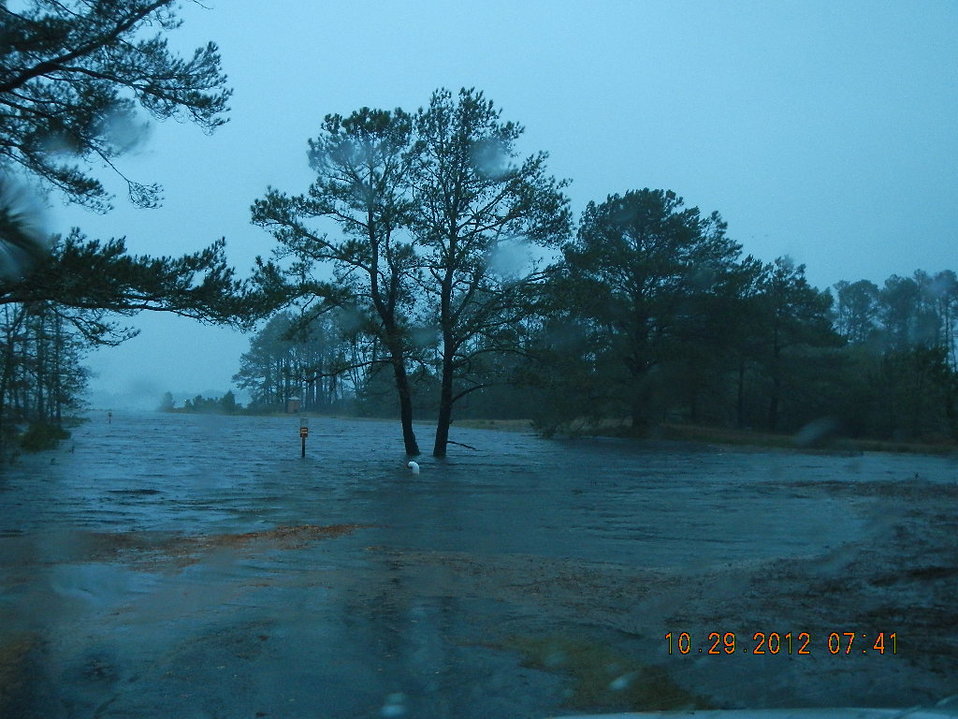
Chincoteague National Wildlife Refuge: October 29, 2012 (VA)

The storm surge from Hurricane Sandy leaves much of Chincoteague National Wildlife Refuge under water, including this boat ramp along the Assateague Channel.